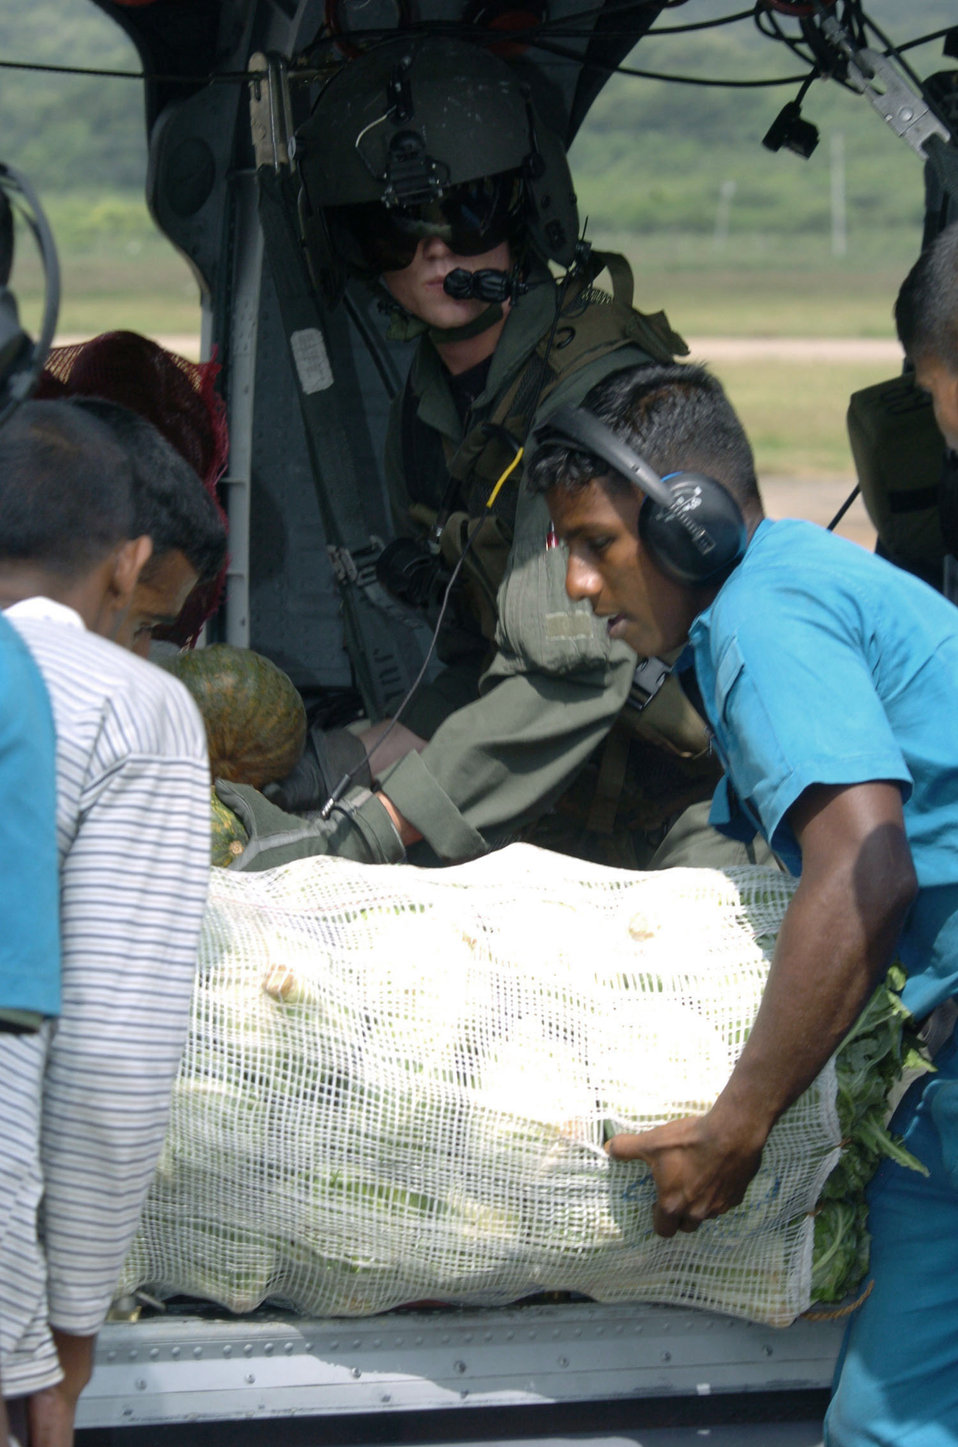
Air Force continues aid in Sri Lanka

AMPARA, Sri Lanka -- Senior Airman Jeff Layton helps Sri Lankans unload relief supplies here during an Operation Unified Assistance mission. The Kadena Airmen are helping deliver food, medicine and supplies to people affected by the Dec. 26 tsunamis. Airman Layton is an HH-60G Pave Hawk helicopter aerial gunner from the 33rd Rescue Squadron at Kadena Air Base, Japan.